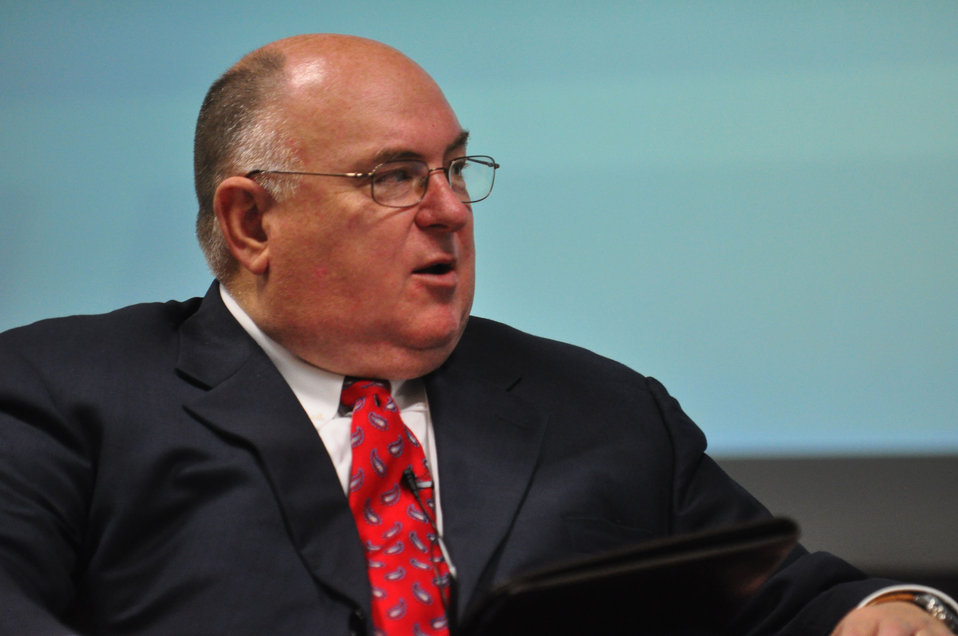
Tennessee Valley Corridor Summit Oak Ridge

13-062 DOE photo Lynn Freeny 5-29-2013 Oak Ridge Tennessee